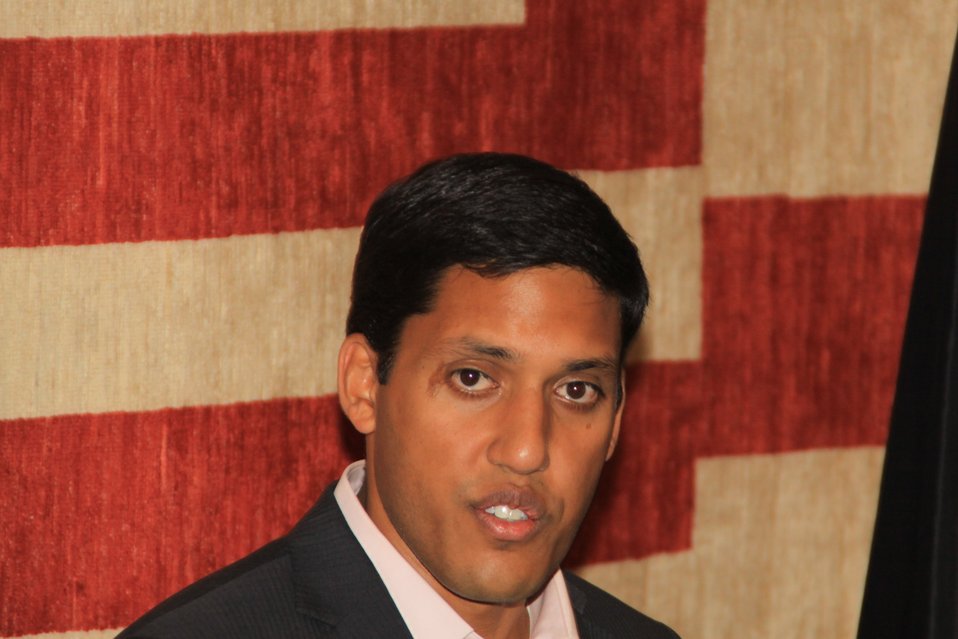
US Embassy Town Hall July 21, 2010